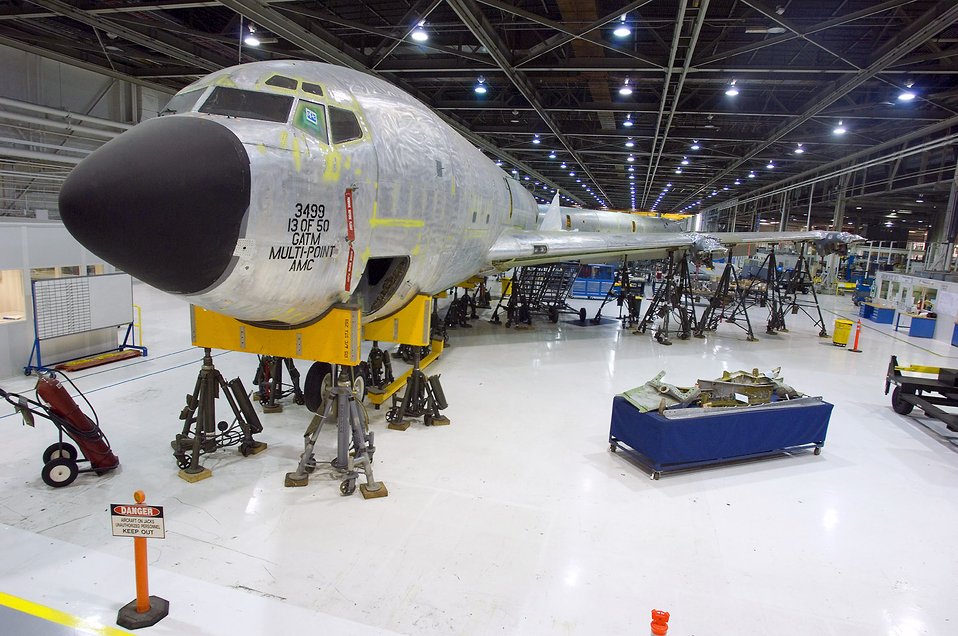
KC-135 Stratotanker

An aging KC-135R Stratotanker sits inside the Oklahoma Air Logistics Center, Okla., waiting for a full maintenance overhaul May 14. The Oklahoma Air Logistics Center is the worldwide manager for a wide range of aircraft, engines, missiles, software and avionics and accessories components. The center manages an inventory of 2,261 aircraft which include the B-1, B-2, B-52, C/KC-135, E-3, VC-25, VC-137 and 25 other contractor logistics support aircraft.